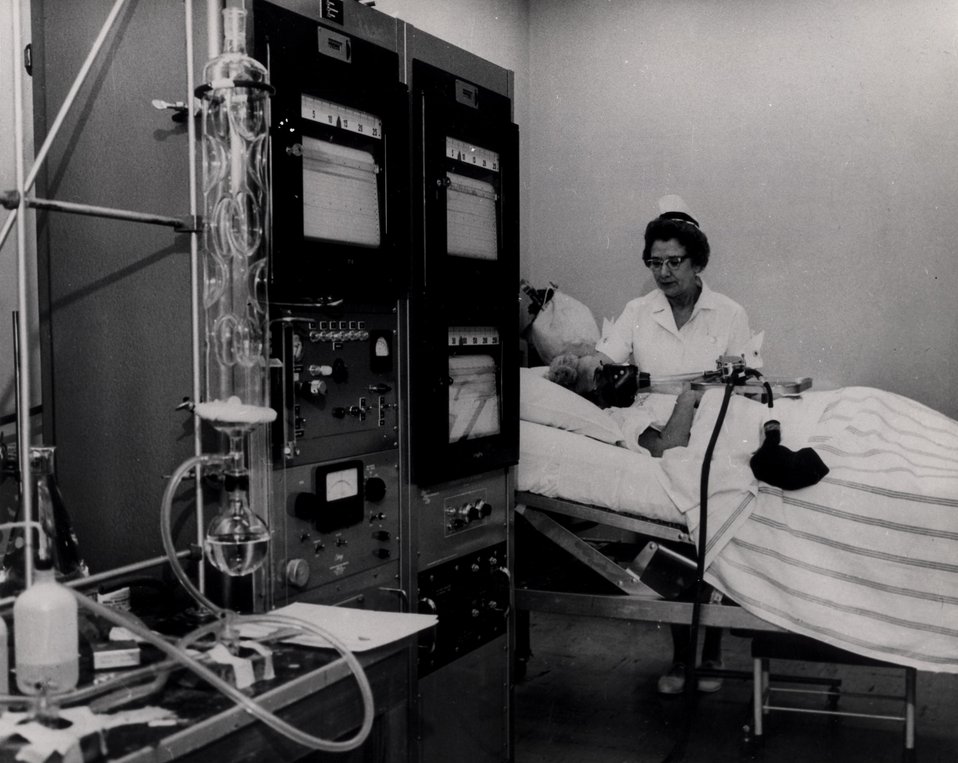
In studies of intermediary metabolism of carbohydrates and amino acids, which have been labeled with radioactive carbon and tritium, the breath of a patient is collected for continuous measurement of the C14 O2.
c.1963